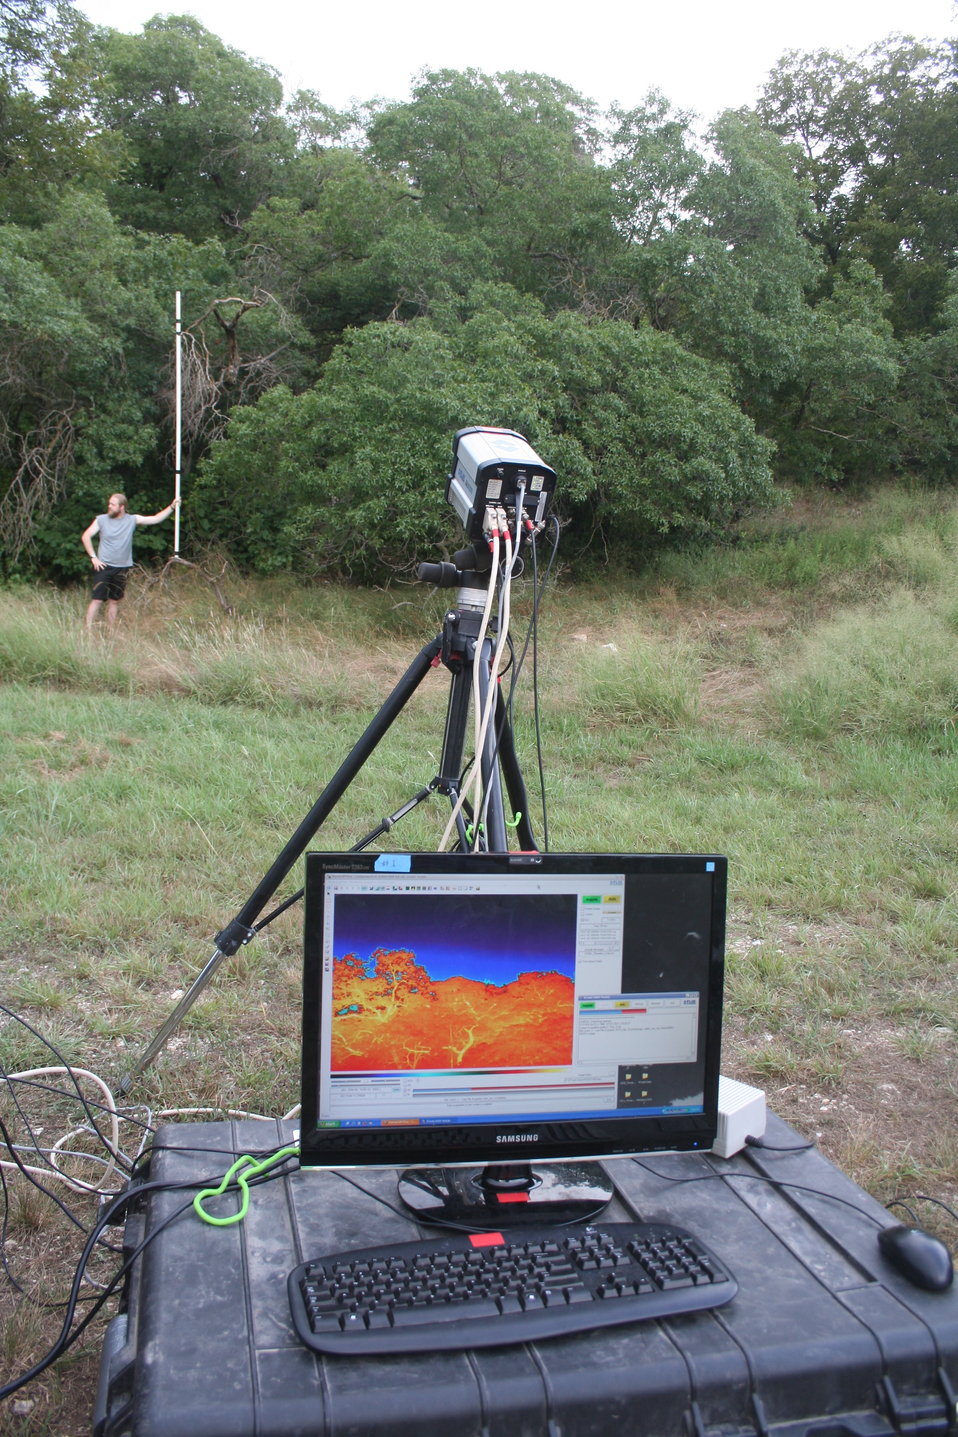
Calibrating the cameras